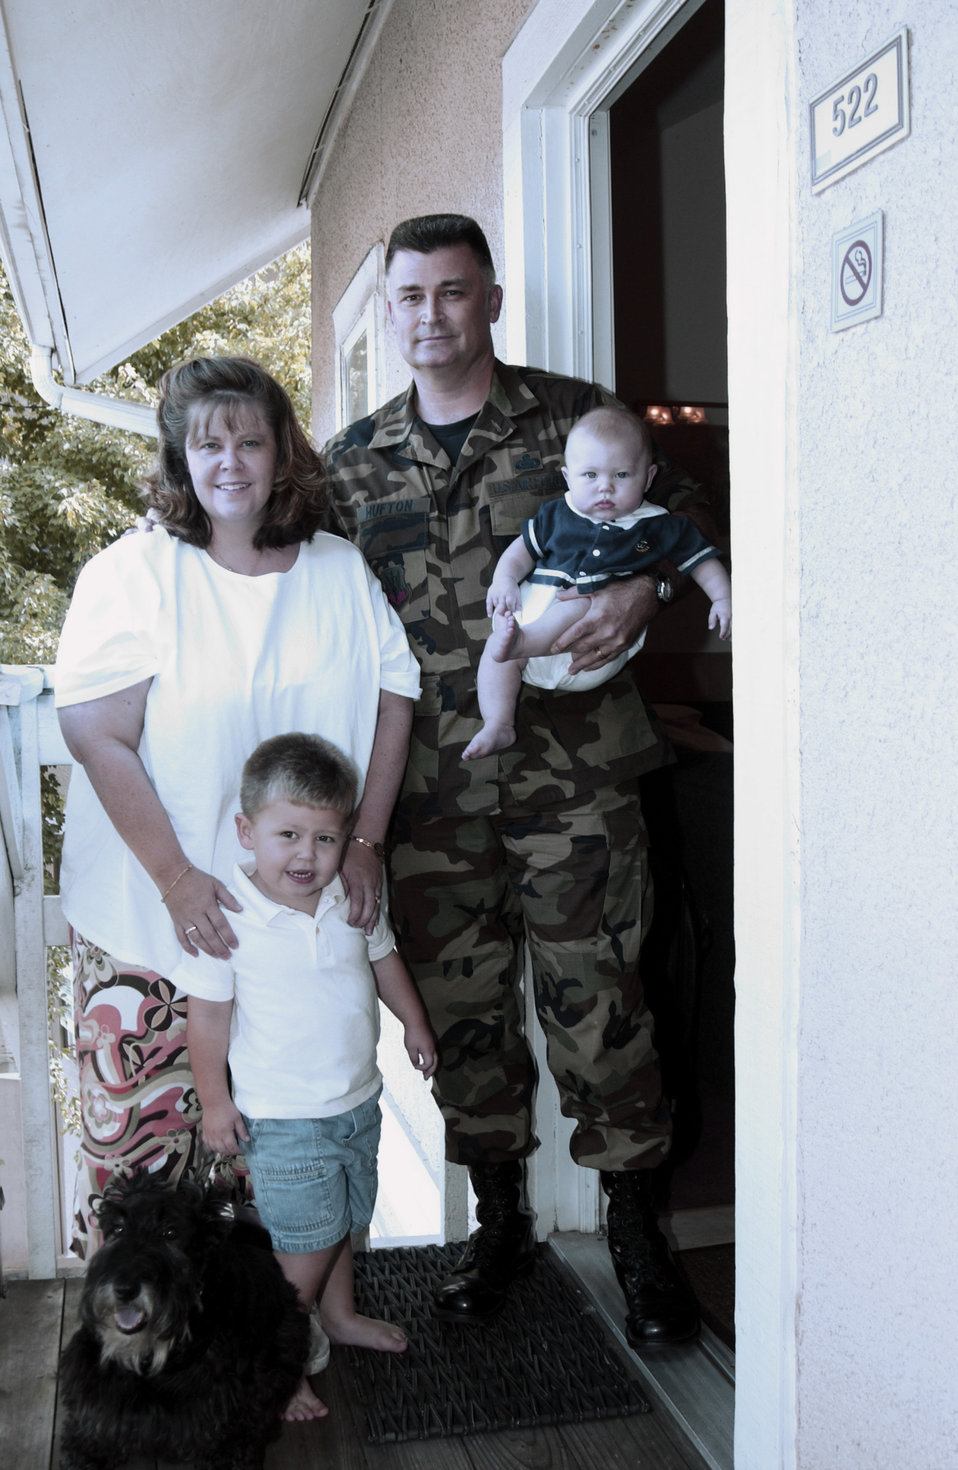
Reserve family faces uncertainties after hurricane

SMYRNA, Ga. -- Senior Master Sgt. David Hufton, his wife, Robin, their two sons, Dawson, 2, and Iain, 5 months, and their dog, Angus, live at a hotel here close to Dobbins Air Reserve Base. Sergeant Hufton is an intelligence analyst with the 403rd Wing at Keesler Air Force Base, Miss., and had only been in his house in Ocean Springs, Miss., less than a month when it was destroyed by Hurricane Katrina.